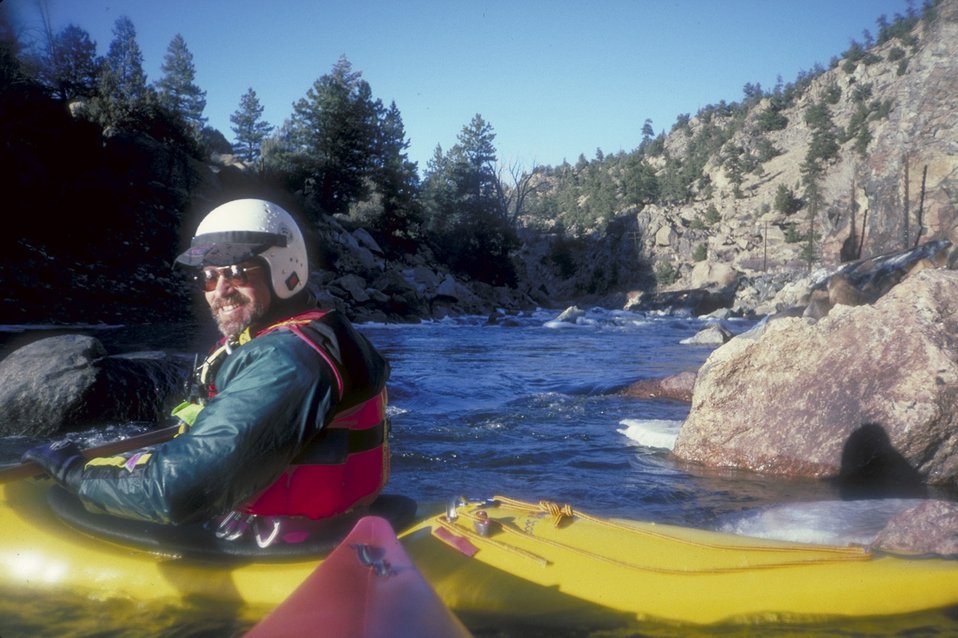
Kayaking on the Arkansas River.